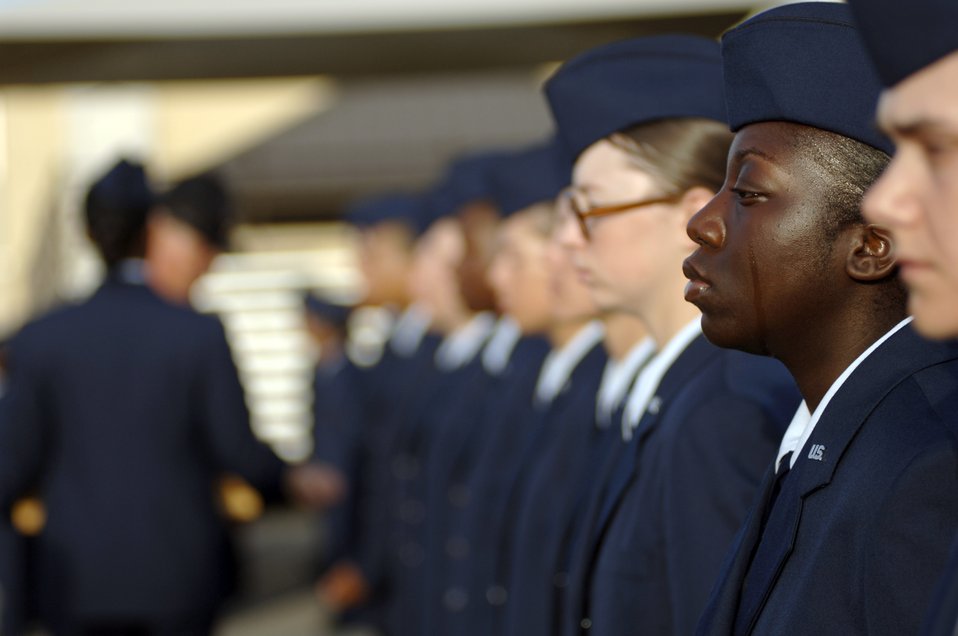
Top chief elaborates on Airman pride

A basic trainee sheds a tear during the Airman's coin ceremony at Lackland Air Force Base, Texas, on Aug. 7. Trainees in their sixth week of basic military training receive an Airman's coin marking their transition from trainee to Airman.